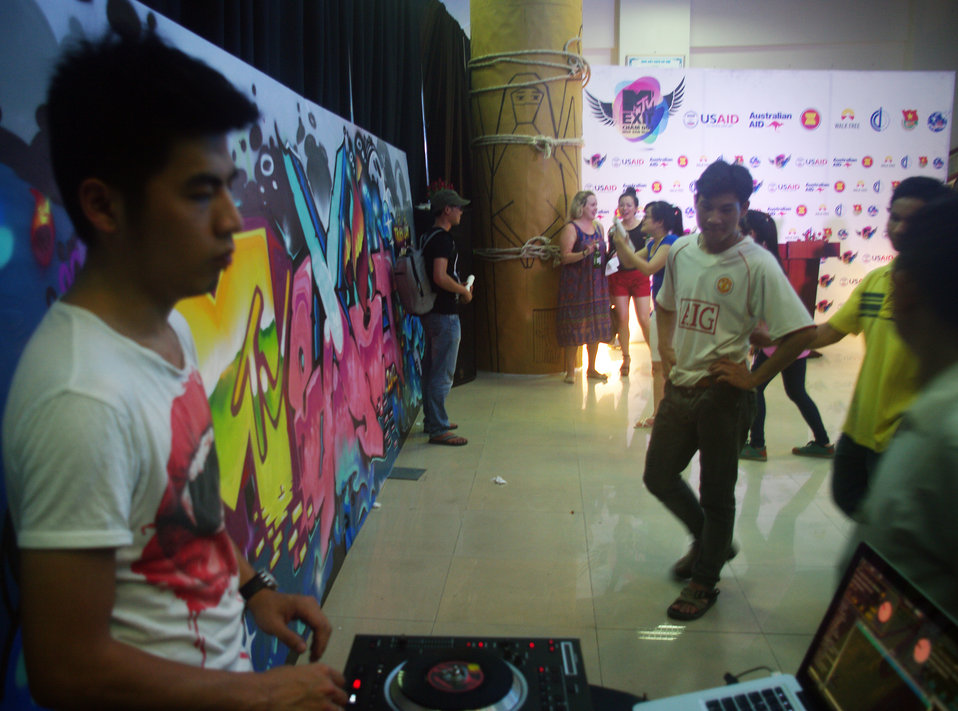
20120519MTV EXIT Youth Forum Hanoi RNyberg 7286